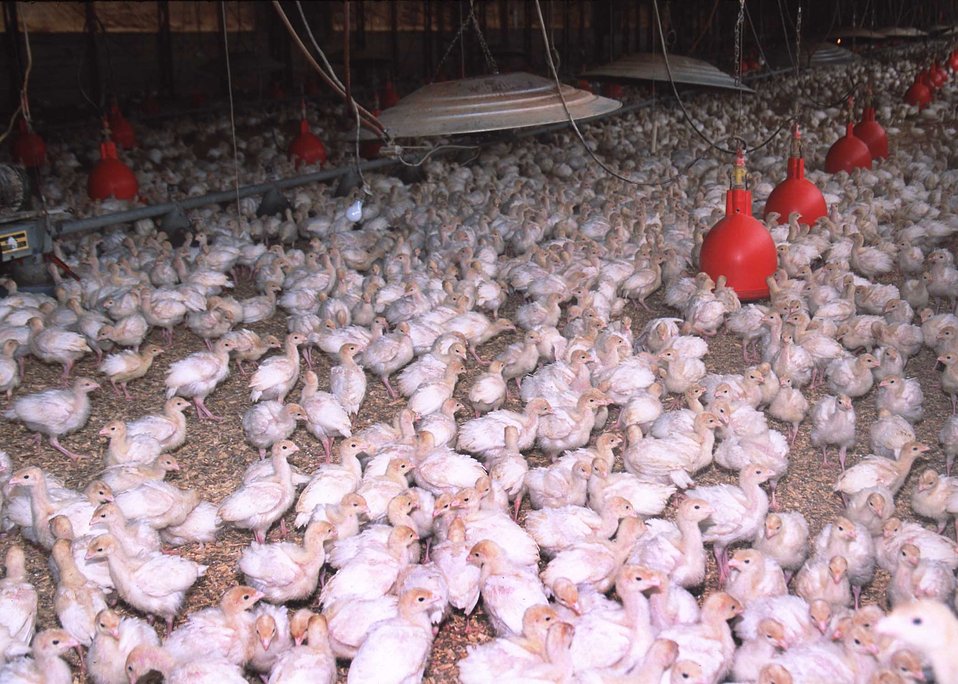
A total of 10,000 turkeys are raised in each building in Benton, Arkansas. Manure and wood chips used for bedding are then composted and used for fertilizer on adjacent pastures.